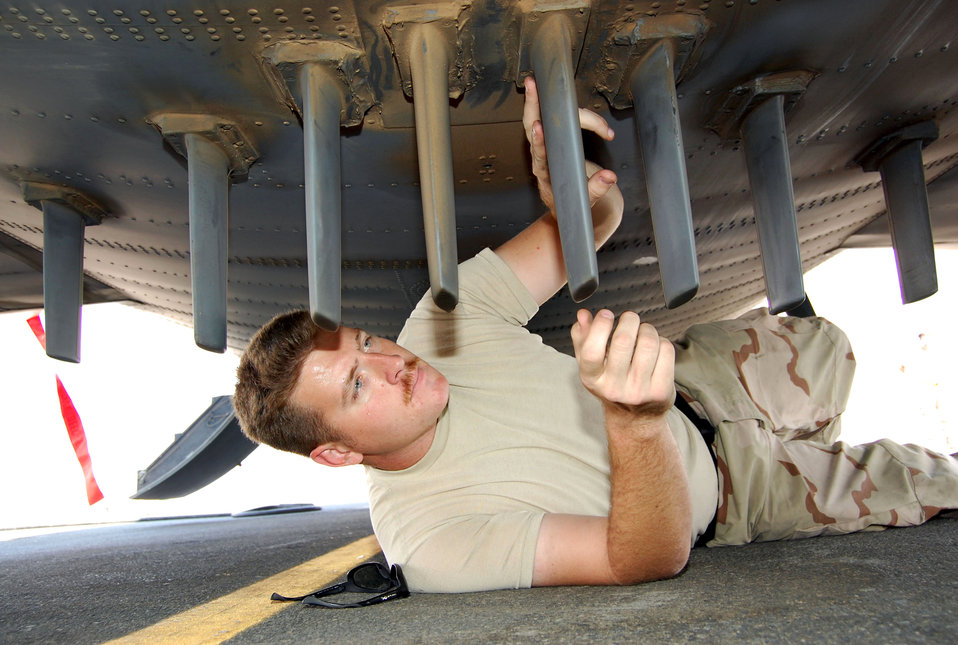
Aging C-130s: the geriatric fleet

Senior Airman Christopher Nichols inspects an antenna array on an EC-130 Compass Call for delamination Oct. 30 in Southwest Asia. Airman Nichols is a communication-navigation specialist with the 386th Expeditionary Aircraft Maintenance Squadron.